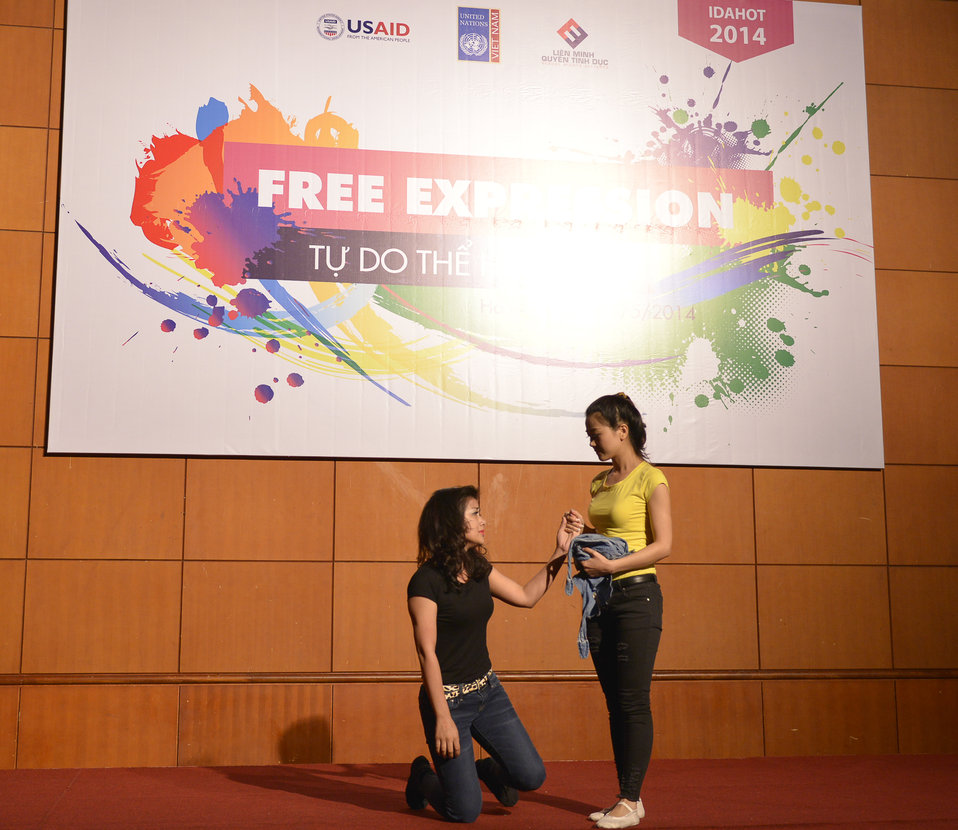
USAID supports celebration of IDAHOT Day 2014 in Hanoi

Hanoi, May 15, 2014.